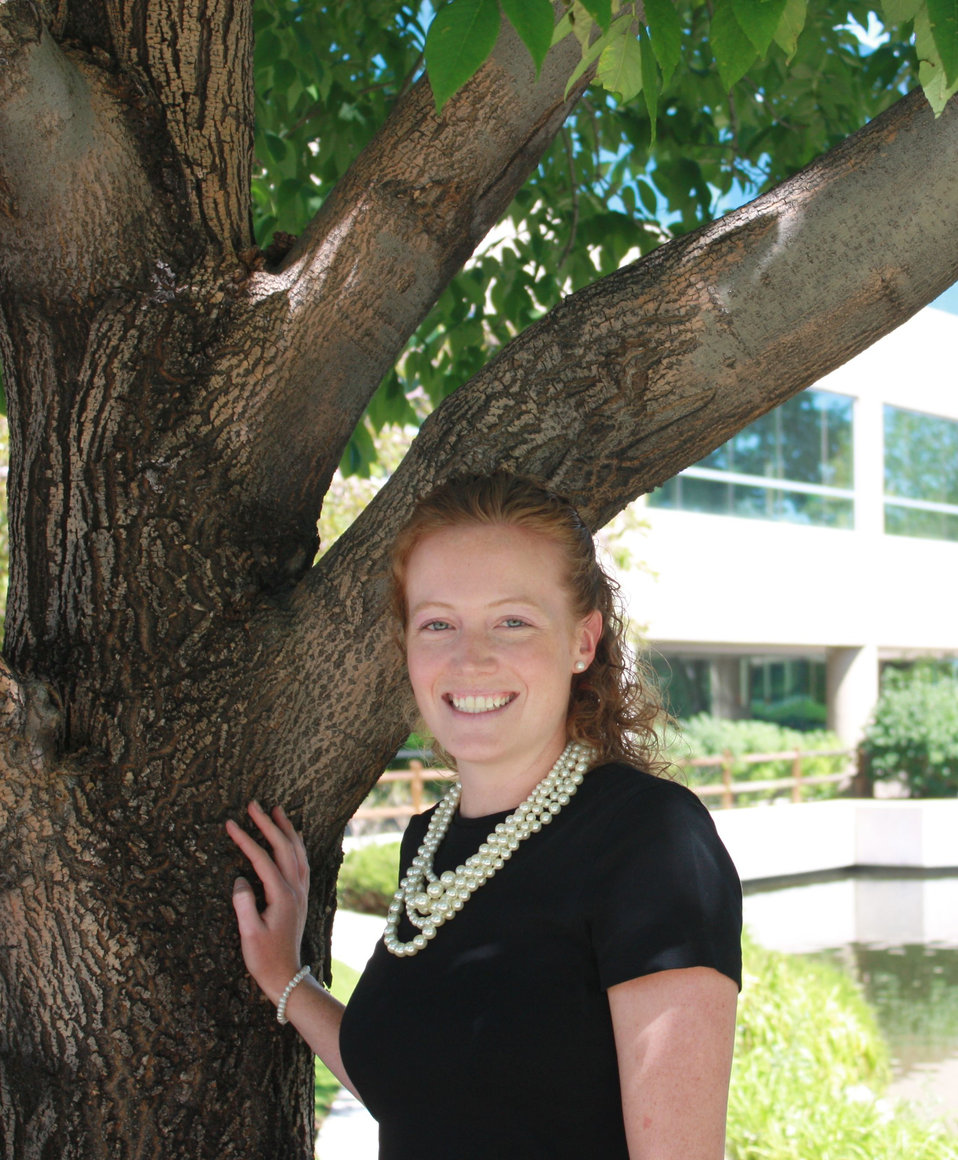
Anna Harris, cropped

new Conserving the Future coordinator, National Wildlife Refuge System